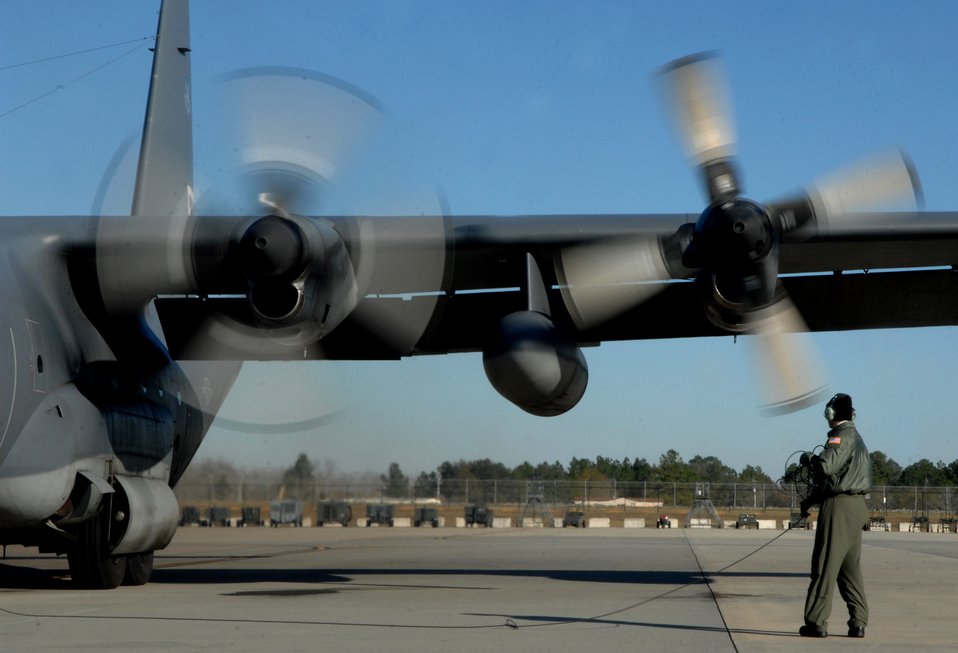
Everything checks out

Airman 1st Class Kade Bollinger performs a preflight inspection on an HC-130P Hercules Jan. 3 that is preparing to take off from Moody Air Force Base, Ga. Airman Bollinger is a loadmaster in the 71st Rescue Squadron.